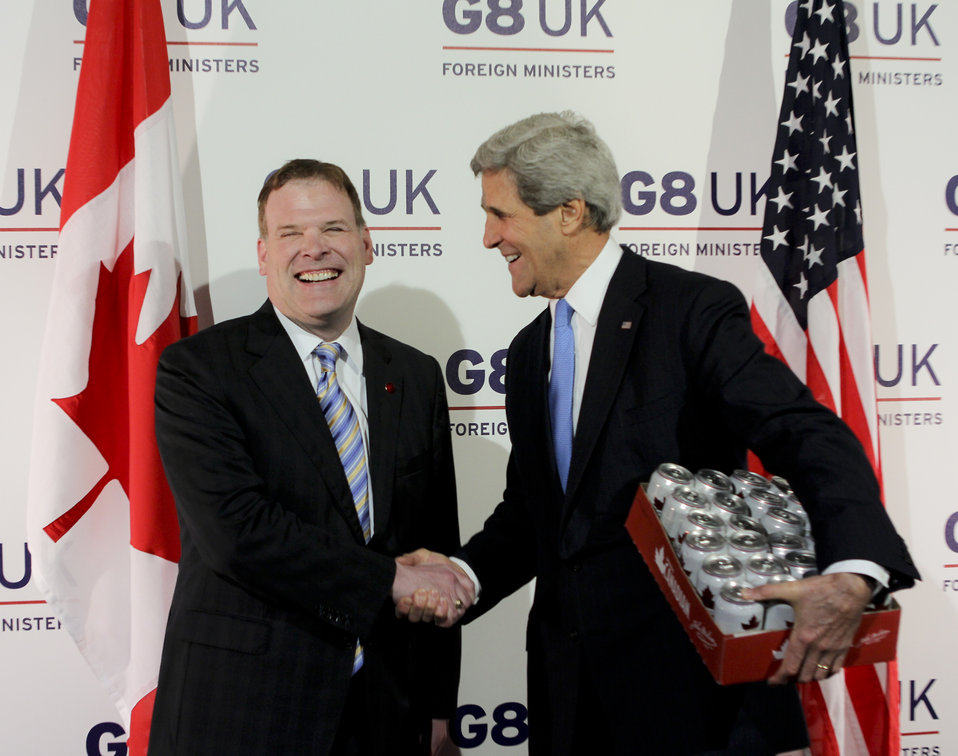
Secretary Kerry and Canadian Foreign Minister John Baird Shake Hands Over Fulfillment of Hockey Match Bet

U.S. Secretary of State John Kerry receives a case of beer from Canadian Foreign Minister John Baird, fulfilling the terms of a bet made over a US-Canada women's hockey match, during a break in the G8 ministerial meetings in London, United Kingdom, April 11, 2013.